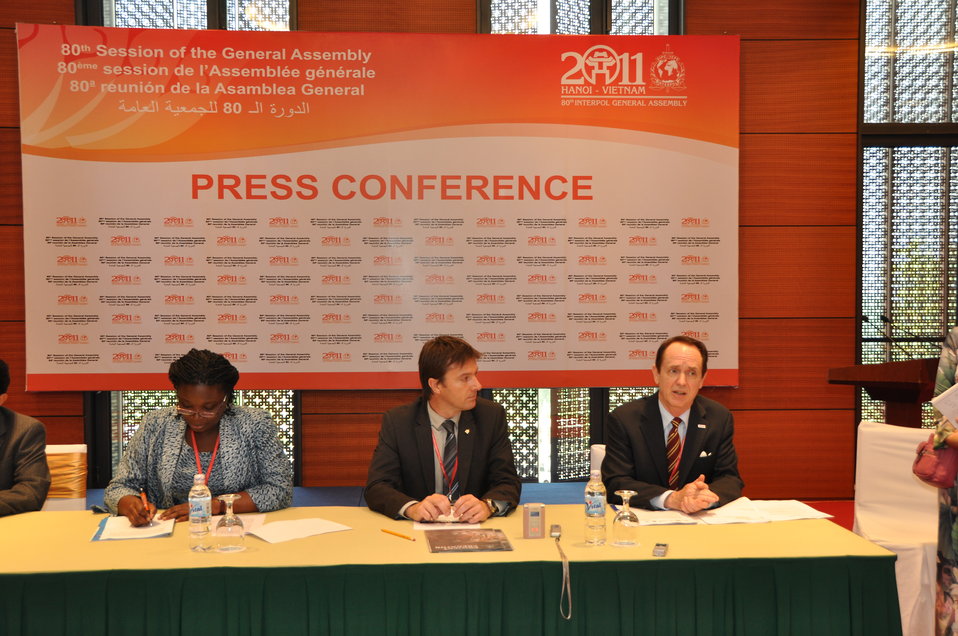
USAID MIssion Director Francis Donovan at the INTERPOL General Assembly in Hanoi, November 2011

Project Predator, an initiative to protect and save the world's last surviving wild tigers, was unveiled today at the 80th INTERPOL General Assembly, a gathering of global law enforcement support from the organization's 190 member countries.

Created by INTERPOL, Project Predator unites the efforts of police, customs and wildlife officials in the 13 countries in Asia where wild tigers can still be found. This new partnership under the Global Tiger Initiative brings together officials from the 13 tiger range countries, the U.S. Agency for International Development (USAID), the UK's Department for Environment, Food and Rural Affairs (Defra), the World Bank, the Smithsonian Institution and INTERPOL.